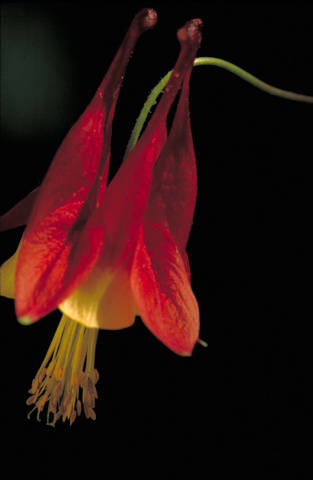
American columbine